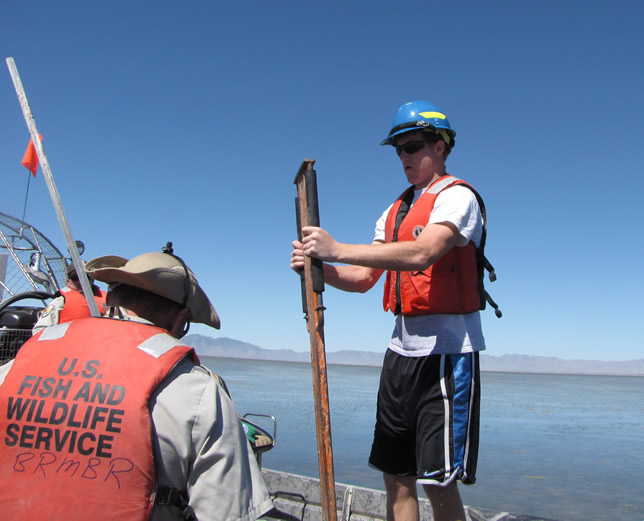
Youth Conservation Corp Participant with a Boundary Sign

Using airboats to get to wet areas, Youth Conservation Corps help to place boundary signs at Bear River Migratory Bird Refuge in Utah.